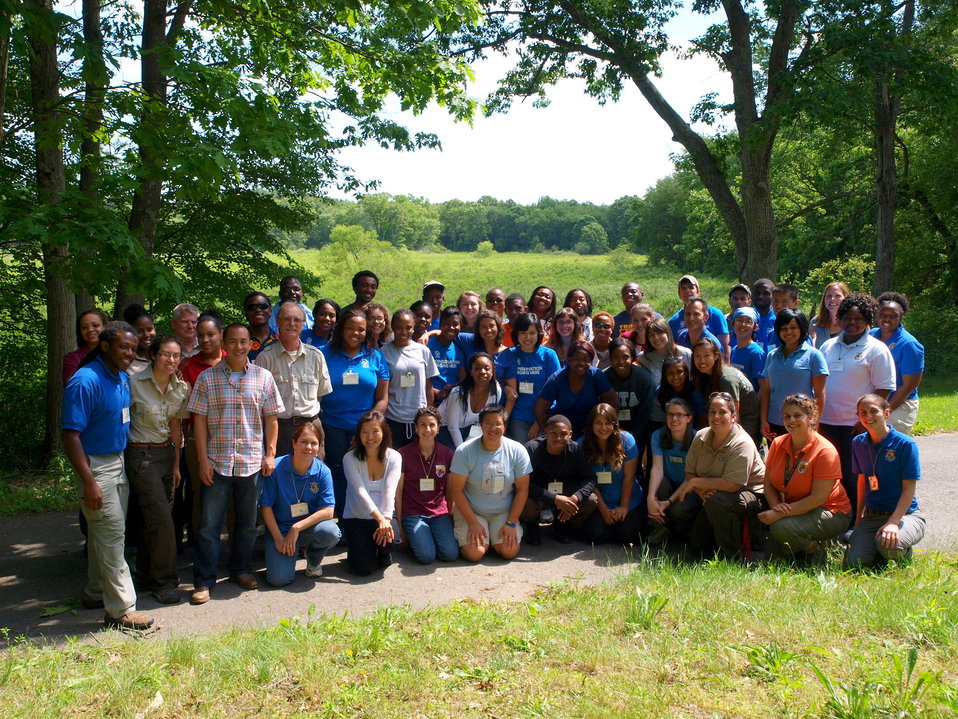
CDIP Orientation 2012